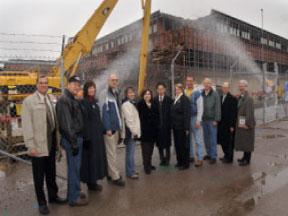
K-25 demolition

A team effort of many individuals, in both Headquarters and the field, enabled the Environmental Management Program to move forward with demolition of the massive K-25 Building, located at Oakridge, TN, on December 16, 2008.